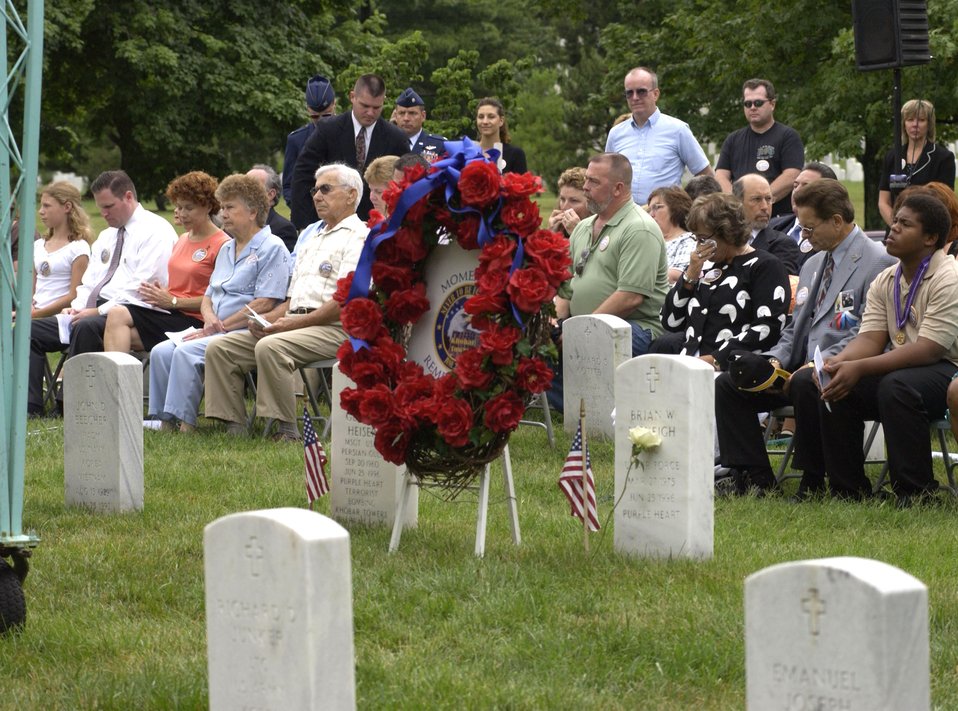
Khobar Towers 10th Anniversary

A wreath stands between the headstones of Master Sgt. Michael George Heiser and Airman 1st Class Brian W. McVeigh during the remembrance ceremony for the Khobar Towers bombing on Sunday, June 25, at Arlington National Cemetery, Va. The two were among 19 Airmen killed on June 25, 1996, in the terrorist bombing at Dhahran Air Base, Saudi Arabia. Family members and friends of the Airmen killed in the terrorist bombing gathered for the ceremony.